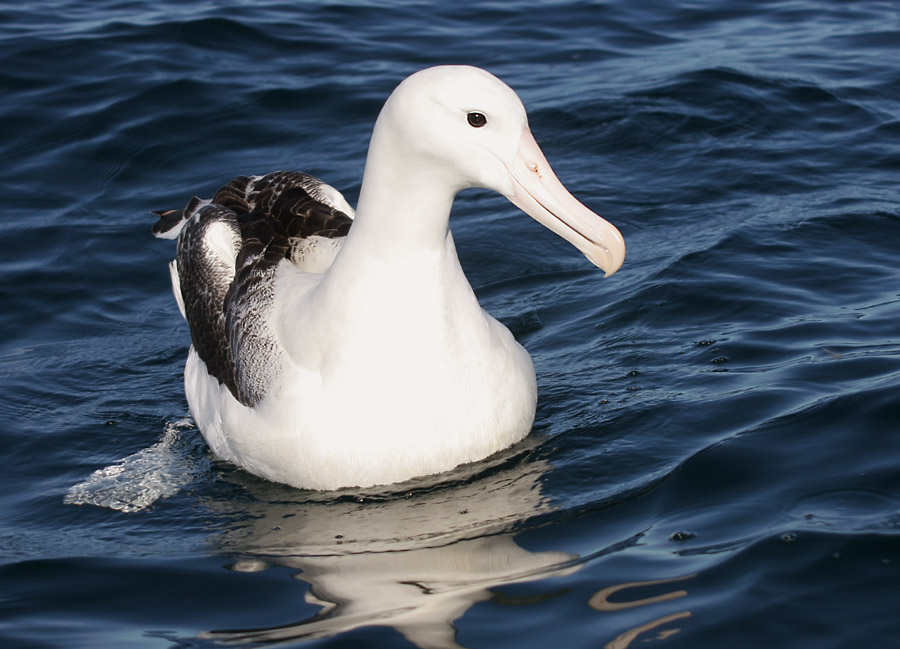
Diomedea epomophora southern royal albatross